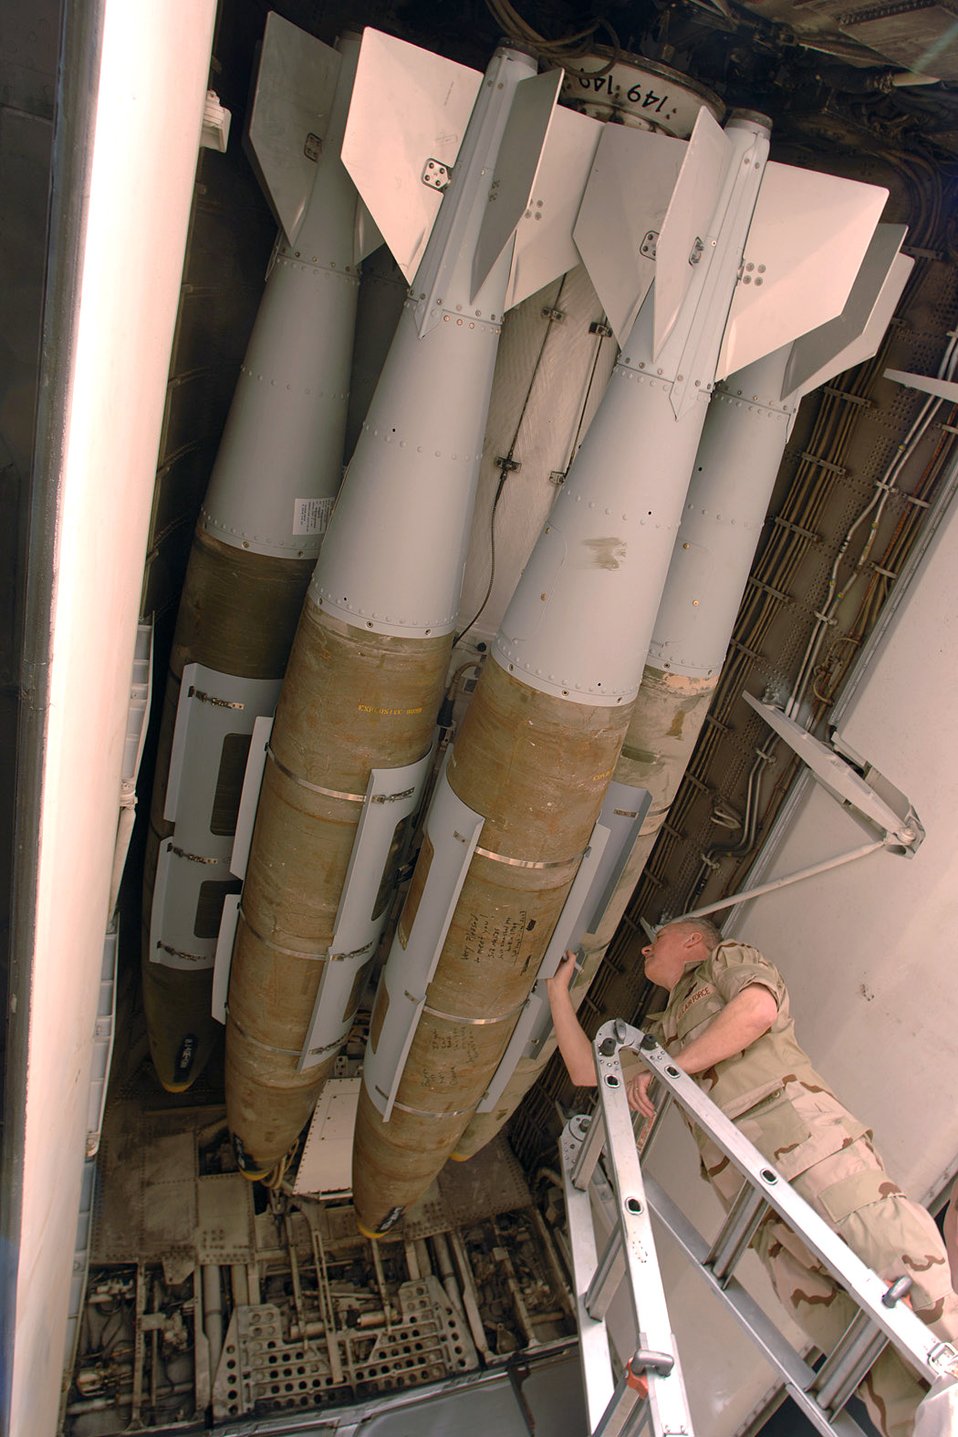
AFMC commander visits Southwest Asia

Gen. Bruce Carlson autographs a GBU-39 small diameter bomb inside a B-1 Lancer Jan. 24 in Southwest Asia. General Carlson is the commander of Air Force Materiel Command.